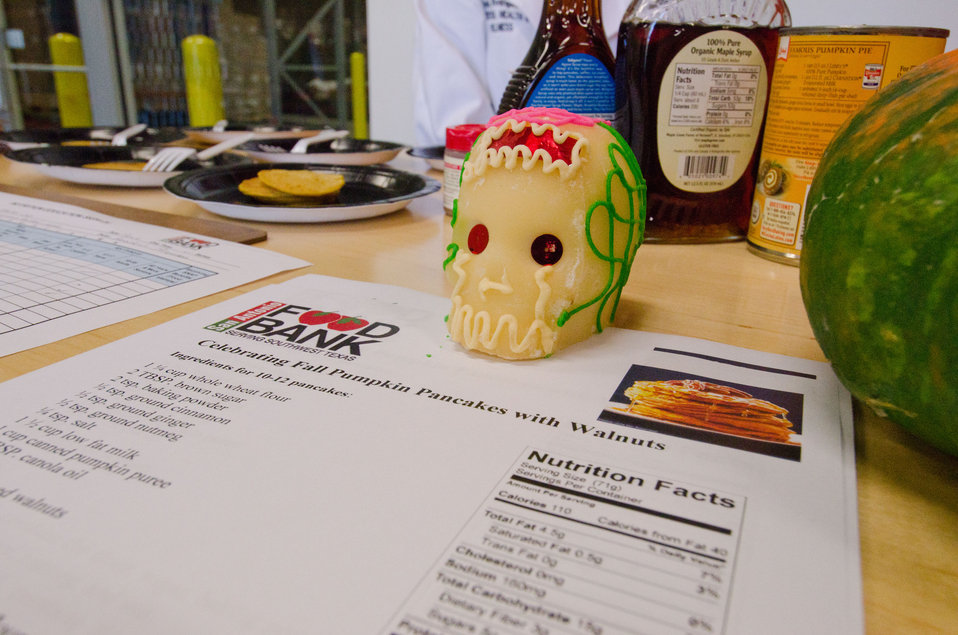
San Antonio Food Bank (SAFB) reception area, in San Antonio TX, on Monday, October 31, 2011, nutrition coordinator Nagelli Rodriguez provided tips, in English and Spanish; and printed information about making healthy, tasty, and easy to prepare food choices when using Supplemental Nutrition Assistance Program (SNAP) benefits. This lesson featured pancakes with pumpkin (or other fall and winter squash) and walnut. The pancakes are made with whole-wheat flour, and served with (low-glycemic) Agave nectar. Traditional pancakes offer starch and sugar, where these offer the flavor boost of pumpkins (vegetables) and walnuts (protein), and whole-wheat flour (high-fiber). The colorful sugar skull on the counter is part of the Mexican culture to honor those who have past, during Day of the Dead (Spanish: Día de Muertos), held on November 1-2. San Antonio Food Bank is a non-profit organization that serves as a clearinghouse by receiving and storing truckloads of donated food, produce, and other grocery. Beyond the glass wall, the first of many multi-tiered pallet racks, full of commodities that come and go through SAFB as they distribute these items to over 500 service agencies that help people in need.
“We couldn’t do what we do without our partnership with USDA’” said President and CEO Eric Cooper. He continues, “We are privileged in partnering (with the USDA) to feeding kids, through the summer, with the Summer Food Service Program, and throughout the year, with the Child and Adult Care Feeding Program (CACFP). Then in our approach to feeding seniors, we partner with USDA in the Commodities Supplemental Food Program (CSFP), and the Senior Farmer’s Market (Nutrition) Program. And then work to bring all our (needy) parties together with our Supplemental Nutrition Assistance Program (SNAP) Outreach. You know, once families have access to food we believe it is important to educate them. Through the support of the SNAP-Education Program we are able to educate them during their time of need. With this comprehensive approach we are really able to get the right food, at the right amount, at the right time, to needy families throughout our community – which allows us to feed the fifty-eight thousand we do, each week.”
SAFB serves 16 counties in Southwest Texas and states, “Nearly one out of every four children and one out of every five adults in Southwest Texas lives in poverty and has difficulty meeting basic nutritional needs.” According to SAFB, sixty-five percent of the people requesting emergency food have children. “Additionally, the senior citizens and those living on a fixed income generally have limited funds for a consistent grocery budget.”
San Antonio is the seventh largest city in the nation with surrounding farms and ranches near its rivers and water supplies. When available they provide fresh surplus produce. Other commodities come from the food industry and manufacturers. The major food brand companies that for various reasons have surplus commodities donate it to SAFB.
The United States Department of Agriculture donates commodities through programs such as The Emergency Food Assistance Program (TEFAP), while Texas farmers supply fresh produce to their Fresh Produce Program.
Public donations come in the form of money, food, volunteer time, and advocacy. Their fleet of trucks to pickup and deliver food as needed.